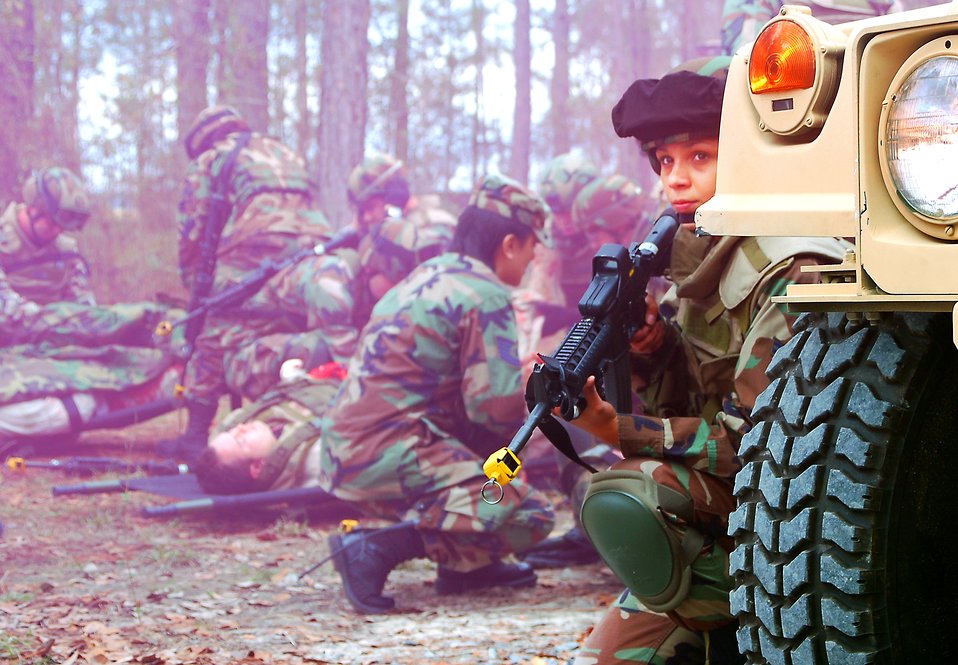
Security forces hone skills through realistic training

Airman 1st Class Nadine Rudke guards the perimeter of a casualty collection point during a combat medical skills exercise Jan. 19 at Moody Air Force Base, Ga. Airman Rudke is an 823rd Security Forces Squadron fire team member.